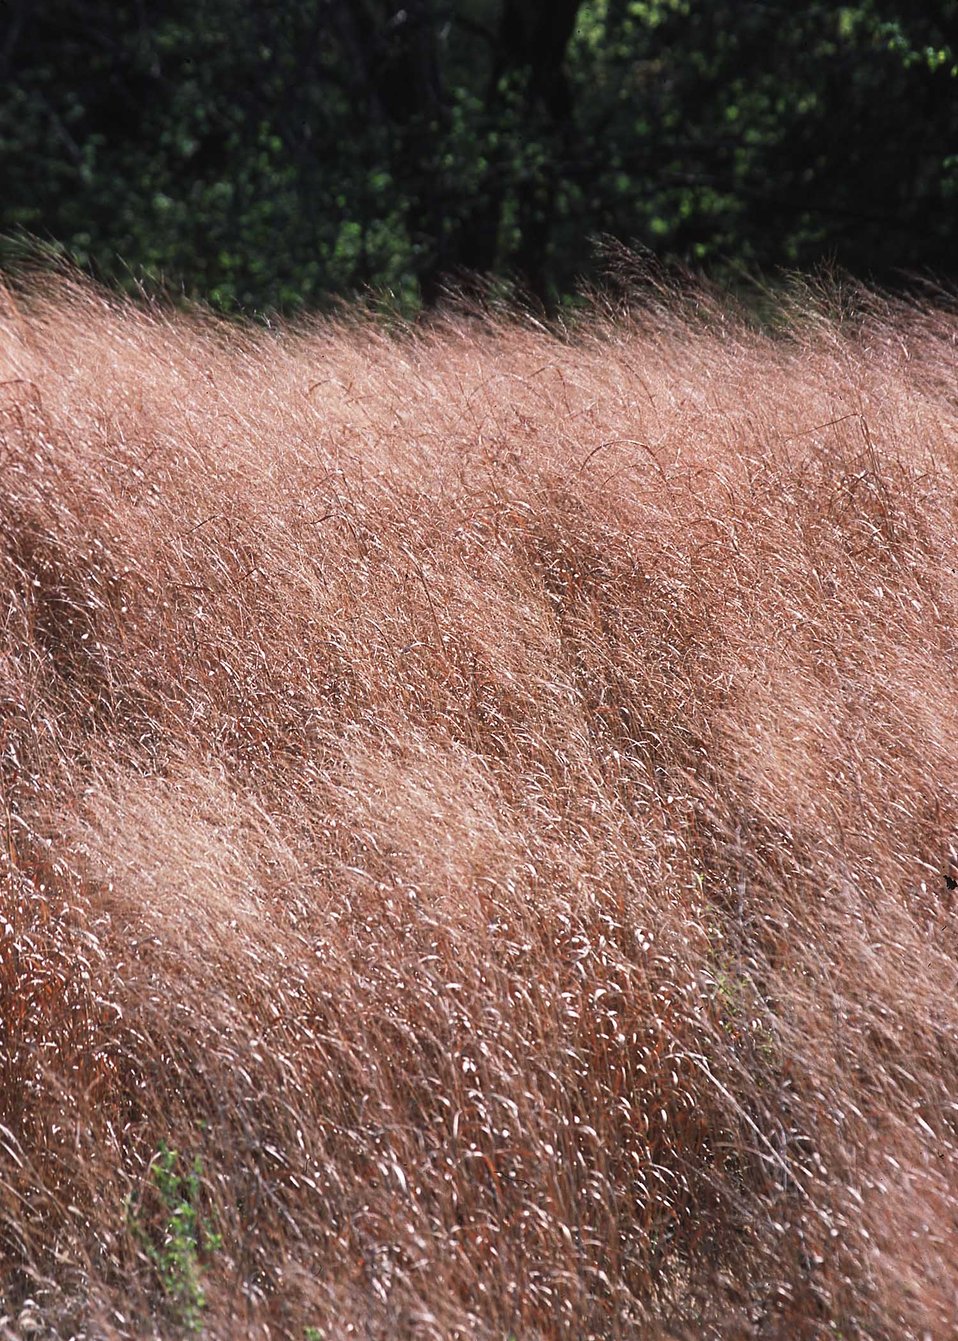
Conservation buffers seeded to Prairie grasses border riparian habitat and a cultivated field. Kansas.